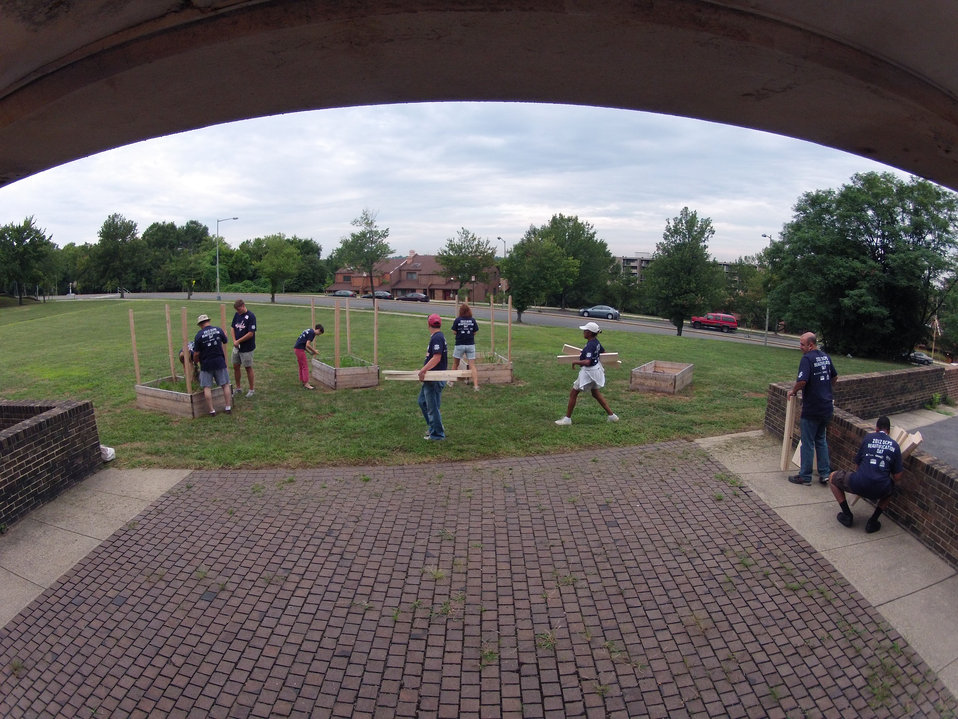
Planter and toolshed area where U.S. Department of Agriculture (USDA) People’s Garden Executive Master Gardeners, friends, and family, along with Washington Capitals fans are volunteering in District of Columbia Public Schools’ (DCPS) Beautification Day, on Saturday, August 25, 2012, at Thurgood Marshall Elementary School, in Washington, D.C. Each year people are invited to help “spruce up” public school facilities in preparation for the first day of school. More than 70 volunteers pitched in at this large school facility. The People’s Garden effort involves building and painting raised planter boxes, then preparing the soil mixture so they are “ready to grow.” Additionally, a team that includes descendants of U.S. Supreme Court Justice Thurgood Marshall assembles a prefabricated garden toolshed. The Justice’s son, John Marshall leads the team, which includes Brianna the Justice’s great-grand daughter in one of many multi-generational efforts at this school today. Washington Capitals Forward Mike Riberio, his family and mascot Slapshot participated in every project underway at Marshall School. From the outside gardens, to inside murals, and robotics worktable construction, the teams made their goals.